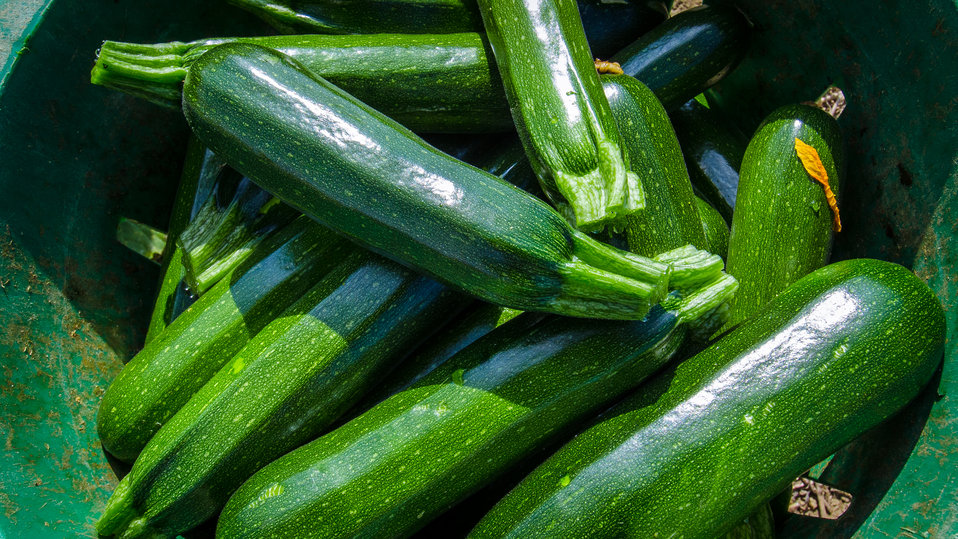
Just-picked green zucchini squash waits to be loaded onto a processing trailer at Kirby Farms in Mechanicsville, VA on Friday, Sep. 20, 2013. Migrant workers will carefully rinse and pack the fruit for shipment to wholesalers. Kirby Farms is a third-generation family farm that covers 500 acres and generates produce and grains on a year-around operation.